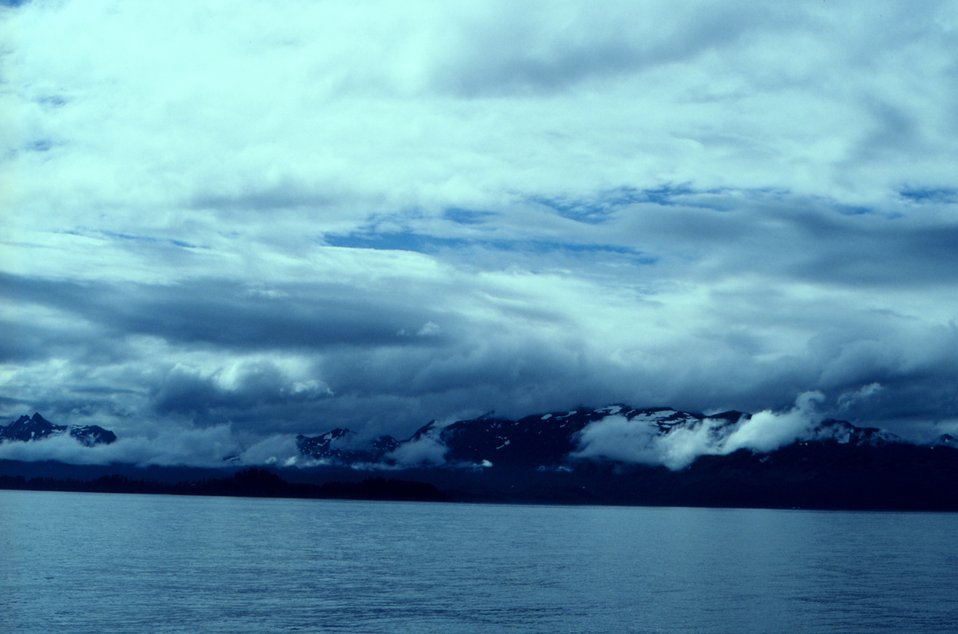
Clouds and mountains meet the sea on the Alaska Peninsula.